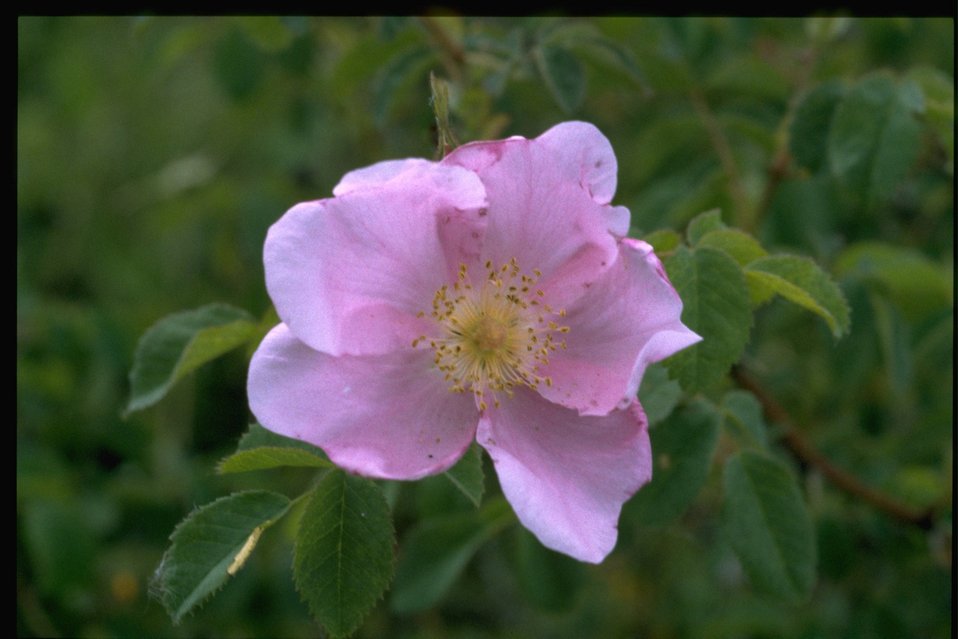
Closeup shot of Rosa nutkana.